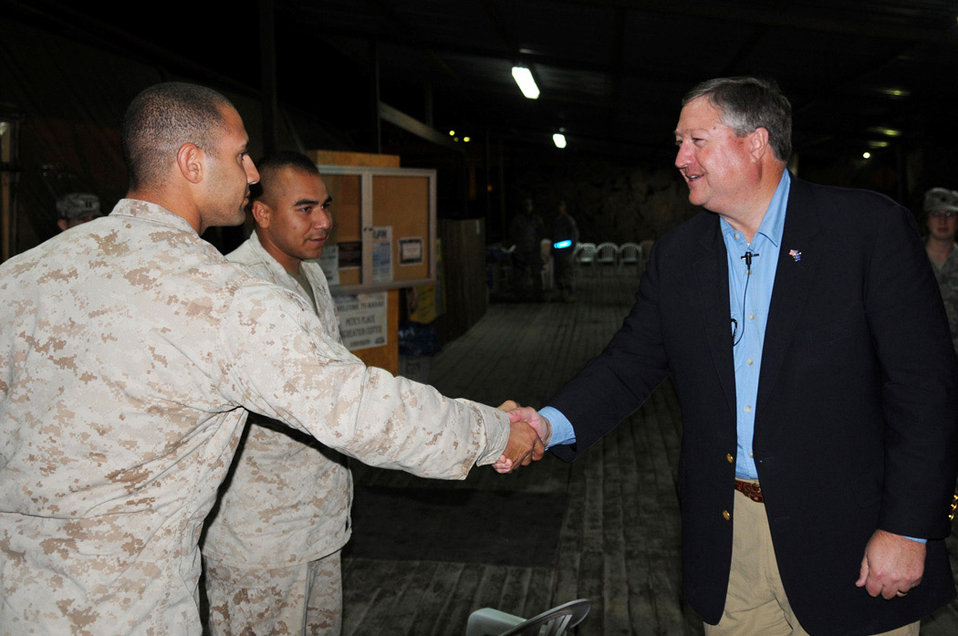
Secretary Donley to remain as SECAF

Secretary of the Air Force Michael Donley, shown here visiting troops at Manas Air Base, Kyrgyzstan, in October 2008, will remain as secretary of the Air Force under the new administration.